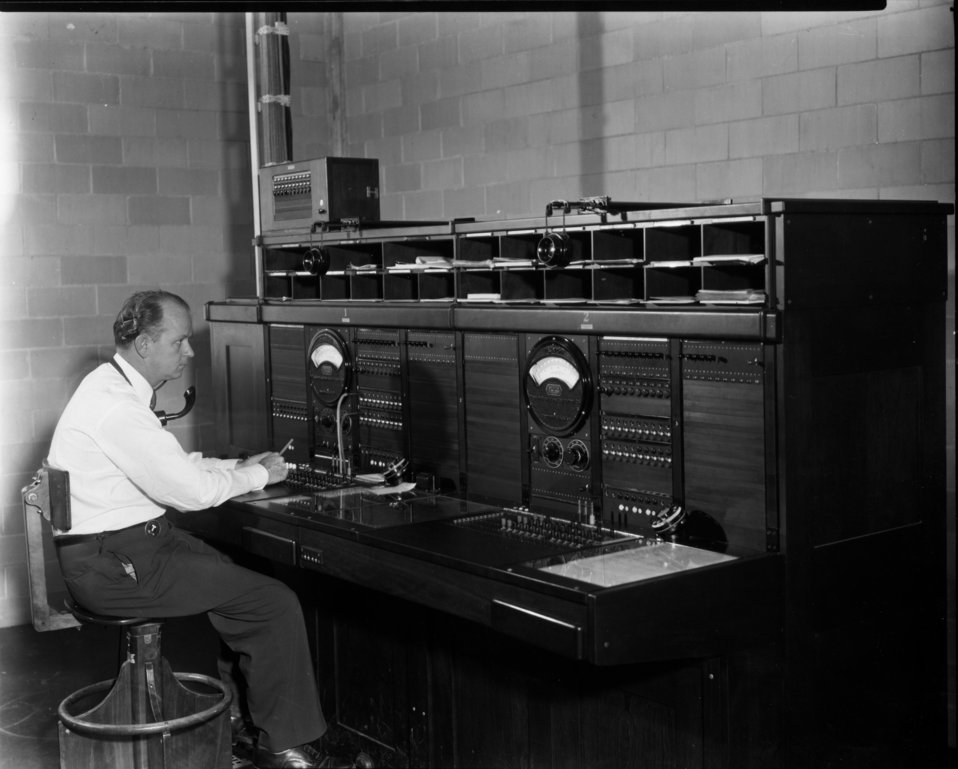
Services at Oak Ridge